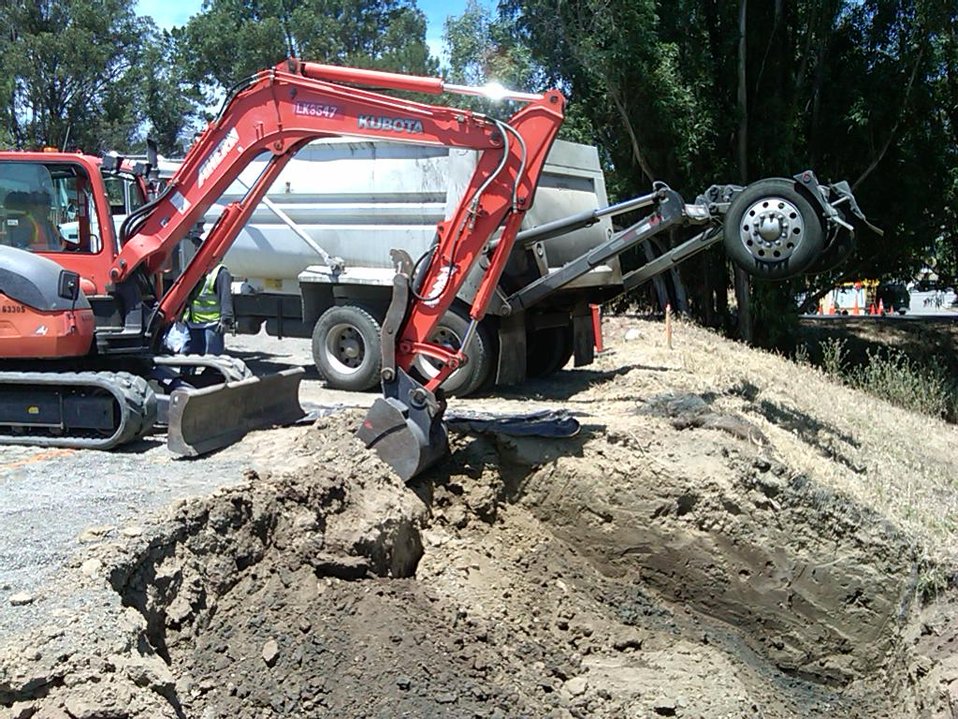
Recovery Act Supports Soil and Debris Cleanup, Groundwater Treatment at SLAC

Recovery Act workers are on track to remove more than 30,000 cubic yards of contaminated soil and debris at the SLAC National Accelerator Laboratory by September 2011.
The Recovery Act invested $14.3 million in legacy cleanup activities at SLAC. In addition to removing contaminated soil and debris that is shipped to local disposal facilities, Recovery Act workers installed three new groundwater treatment systems.